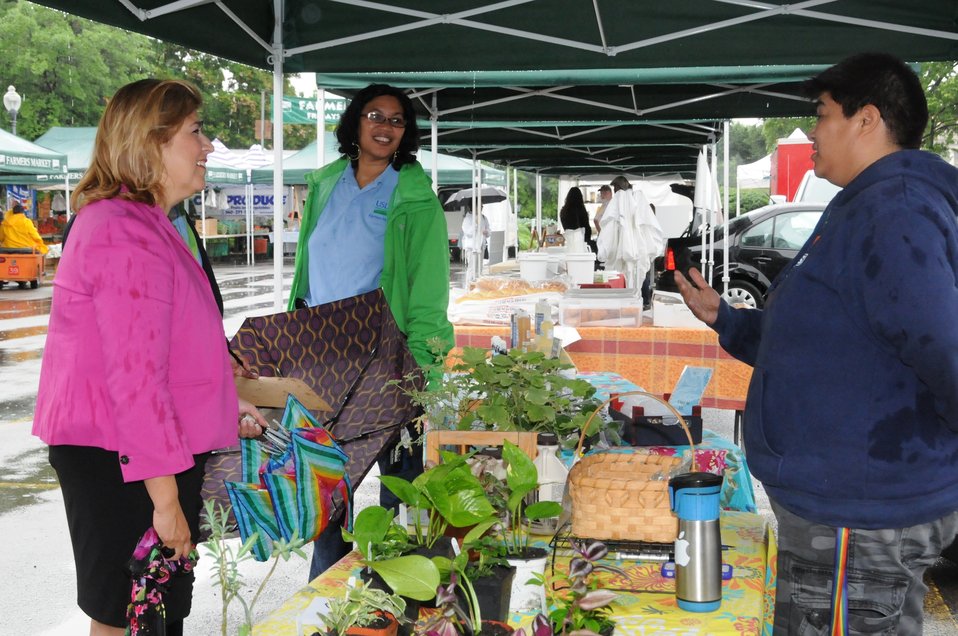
Alonzo and So Very Special

U.S. Department of Agriculture (USDA) Agricultural Marketing Service (AMS) Administrator Anne Alonzo talks with Melissa Hopko from 'So Very Special' before the opening of the USDA Farmers Market on Friday, Jun. 7, 2013.USDA photo by Hakim Fobia.